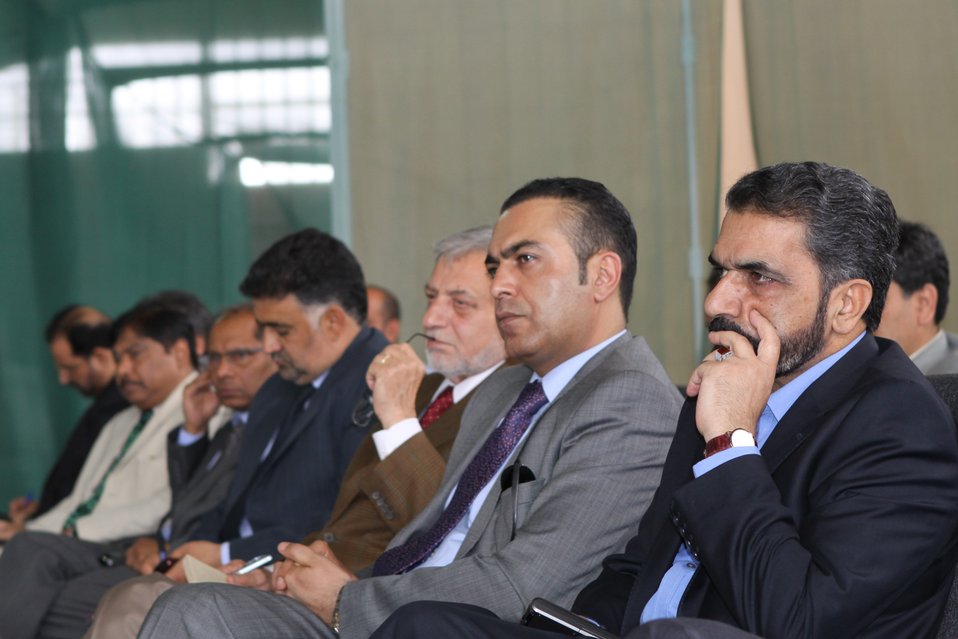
100525 Hirat Marble Conference 197